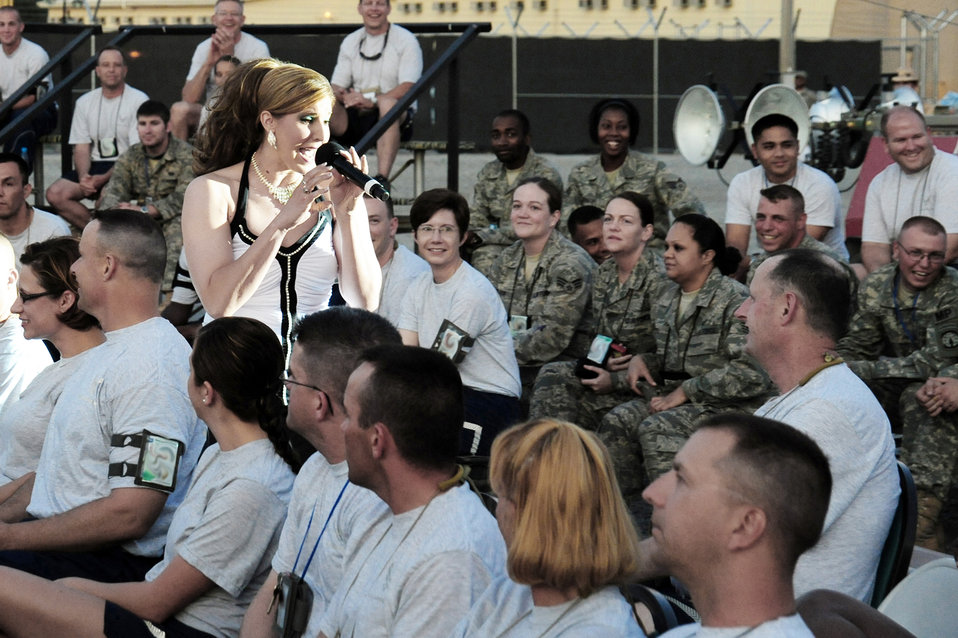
Tops In Blue entertain deployed forces in Kyrgyzstan

Staff Sgt. Naomi Keen gets up-close and personal with the crowd during a Tops In Blue show July 9 at Manas Air Base, Kyrgyzstan. Sergeant Keen is a 59th Surgical Operations Squadron health services craftsman stationed at Lackland Air Force Base, Texas, and hails from Simpsonville, Texas.